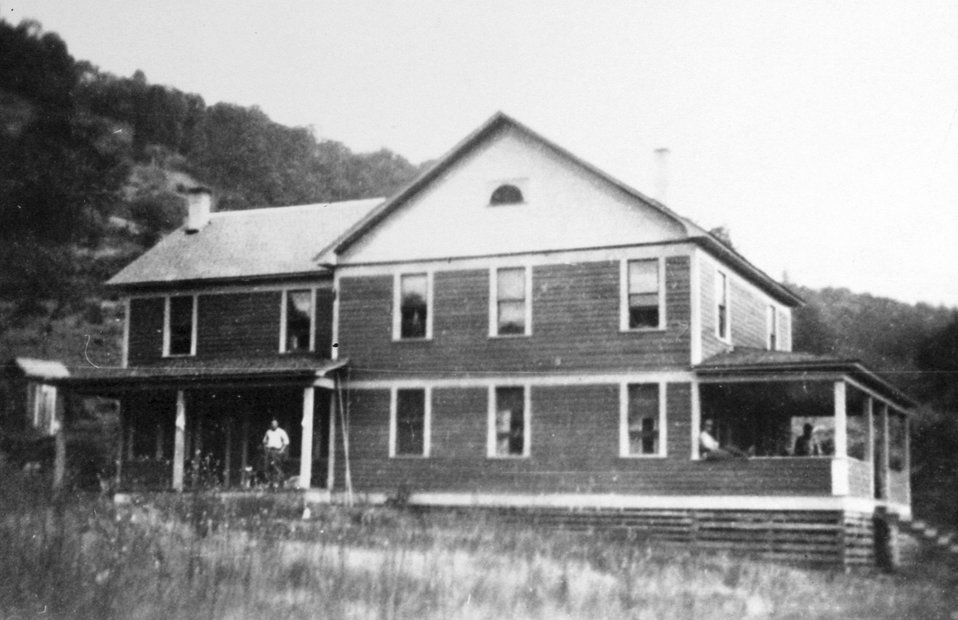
Jake Fry's Big Bend Ranch.